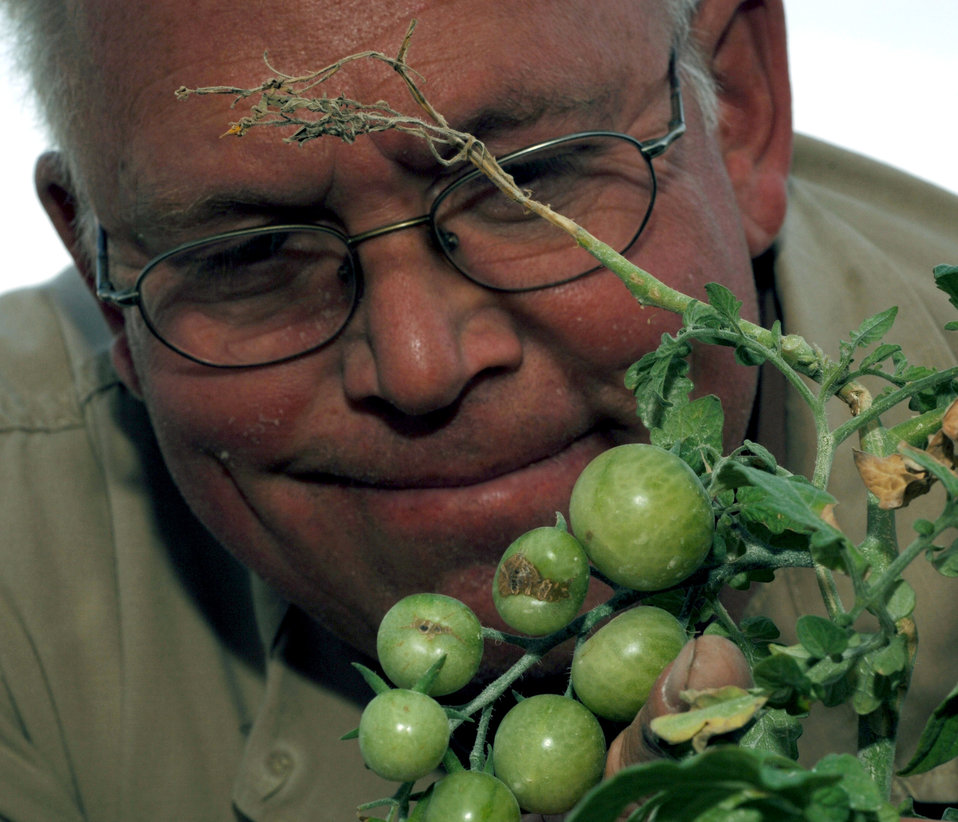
Garden in the desert

Bruce Neihart, a contractor at a deployed location in Southwest Asia checks the growth of his side project -- a mini garden with flowers, herbs, and tomatoes Wednesday, Mar. 8, 2006. He is well known for his tomatoes and other veggies sprouting up here in the desert. Mr. Neihart is with the 379th Expeditionary Logistics Readiness Squadron.